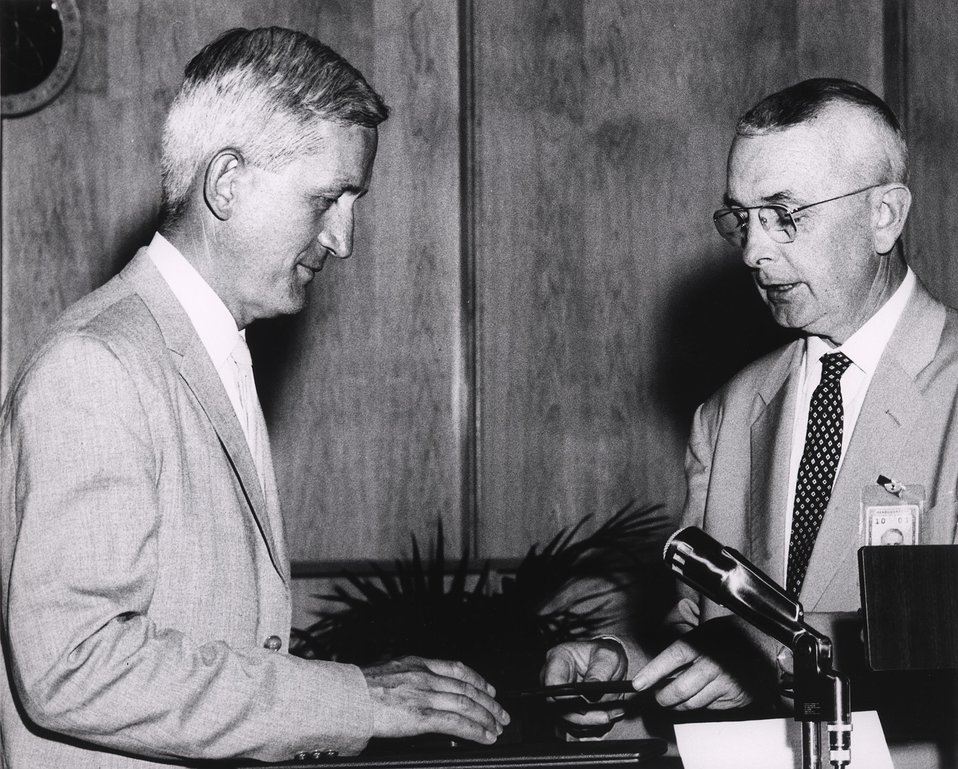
First Lawrence Award Ceremony, in Washington, on June 27, 1960.